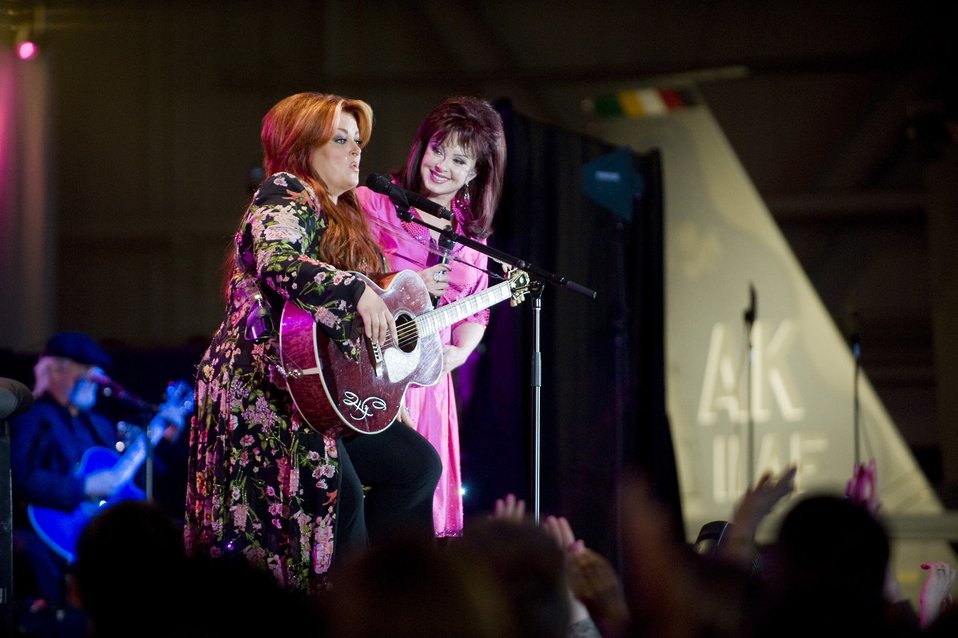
Wynonna headlines concert for military

Wynonna and Naomi Judd sing together before the military and Alaskan crowd at the Alaska's Operation Gratitude concert June 27 at Elmendorf Air Force Base, Alaska. The concert was a part of Alaska's 50 years of statehood celebration.